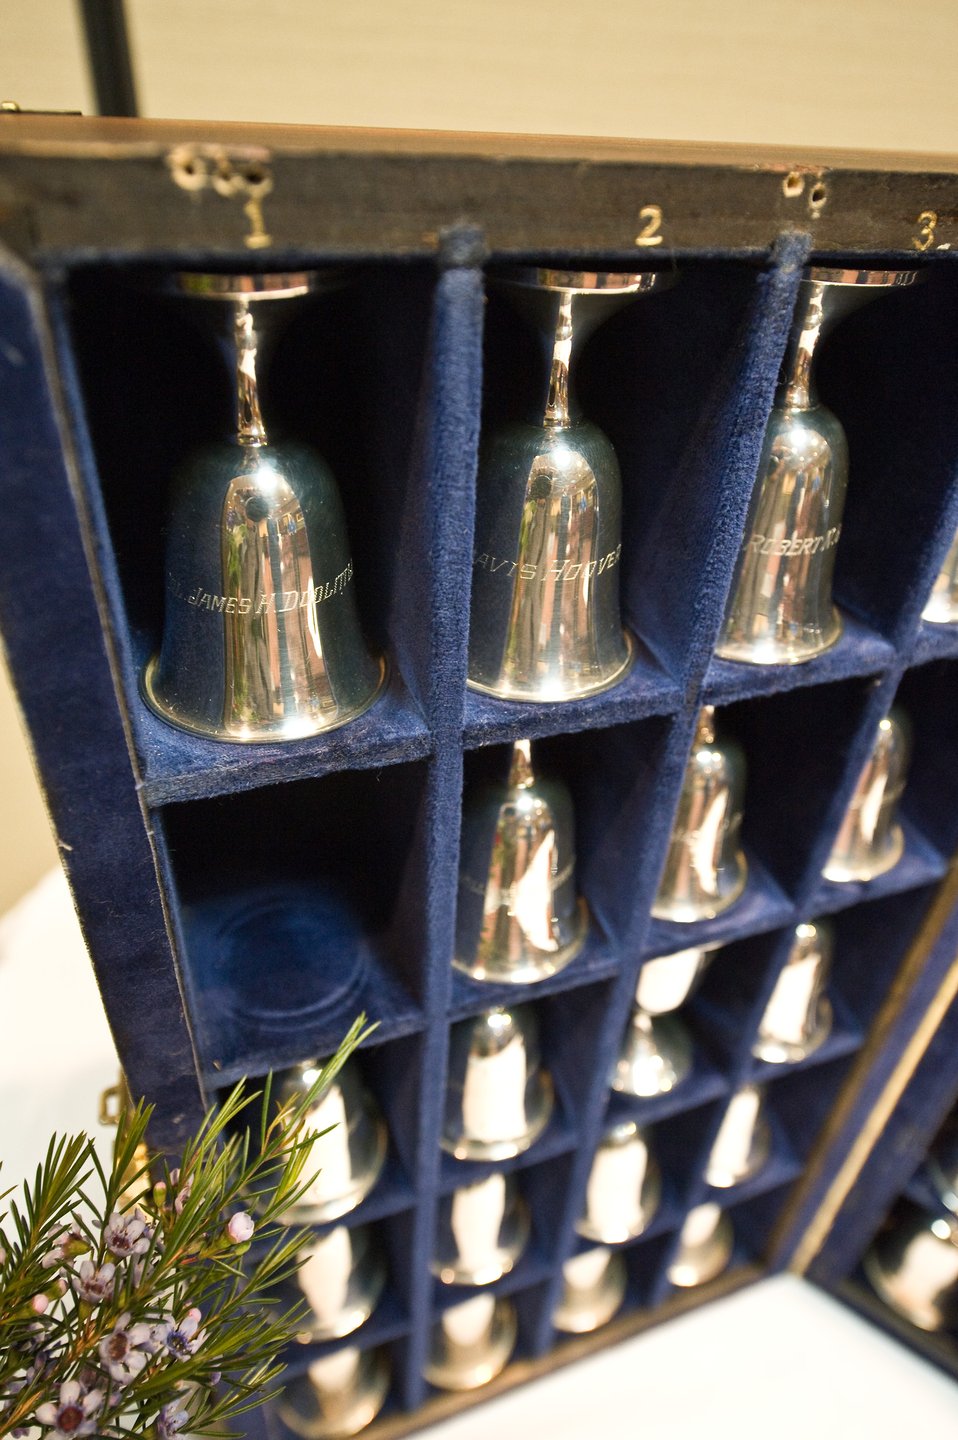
Doolittle Tokyo Raiders' Goblet Ceremony

James Doolittle's (upper left) goblet and the goblets of some of the other Doolittle Raiders' who have pasted are present at the Goblet Ceremony on April 16, 2010 in Fairborn, Ohio. The ceremony honors all who participated in the Doolittle Raid on Tokyo during W.W. II. The downturned goblets represent aircrew who have not survived to this day. During the ceremony the name of every person was read and a present Doolittle Raider responds to indicate the spirit of those who passed are present. The collection of goblets, each with an aircrew name engraved both right side up and upside down. The set of goblets is now maintained by the National Museum of the U.S. Air Force.